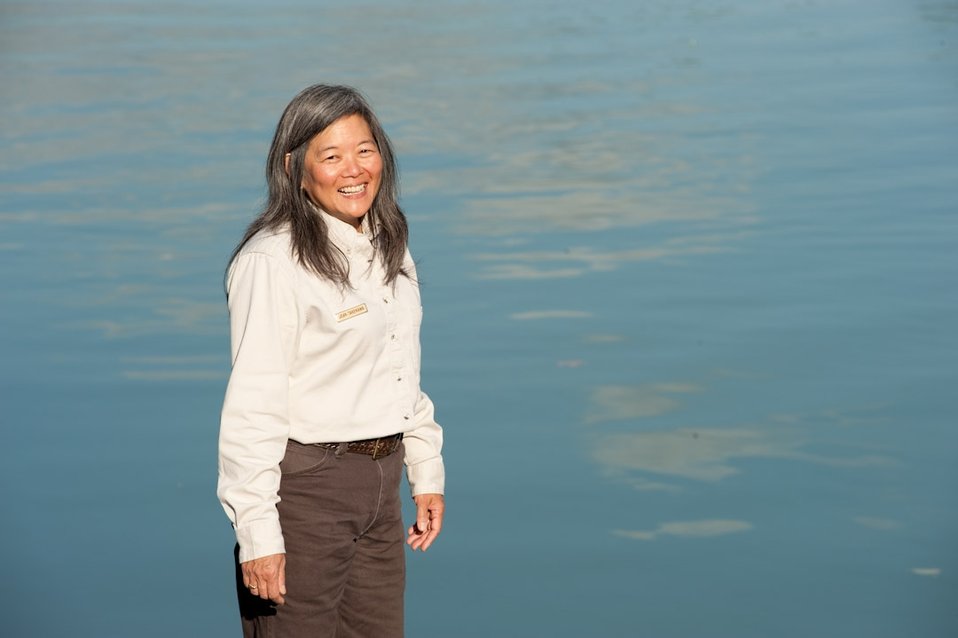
Jean Takekawa, manager of the Nisqually National Wildlife Refuge